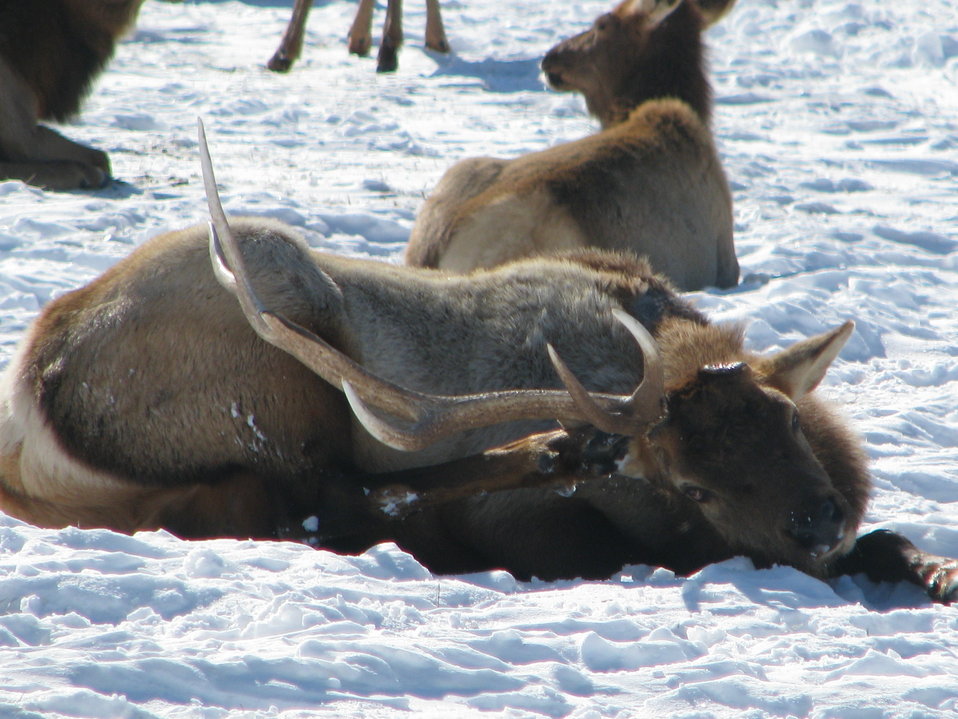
Bull Elk Scratches its Remaining Antler

Bull elk do not always lose both antlers simultaneously. Here, a bull elk scratches at its remaining antler at the National Elk Refuge in Wyoming. The bloody scab on his left side indicates the other antler recently dropped.